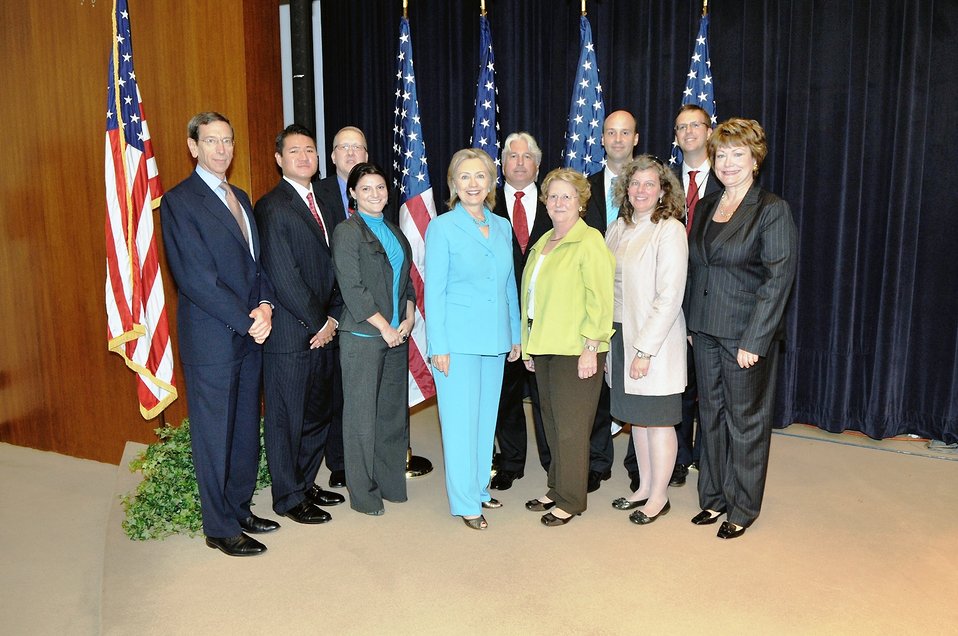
Secretary Clinton With Senior Members of the U.S. Delegation to the New START Negotiations and Nuclear Posture Review Department

U.S. Secretary of State Hillary Rodham Clinton (center) poses for a photo with senior members of the U.S. Delegation to the New START Negotiations and Nuclear Posture Review Department at the U.S. Department of State in Washington, D.C., on July 13, 2010.